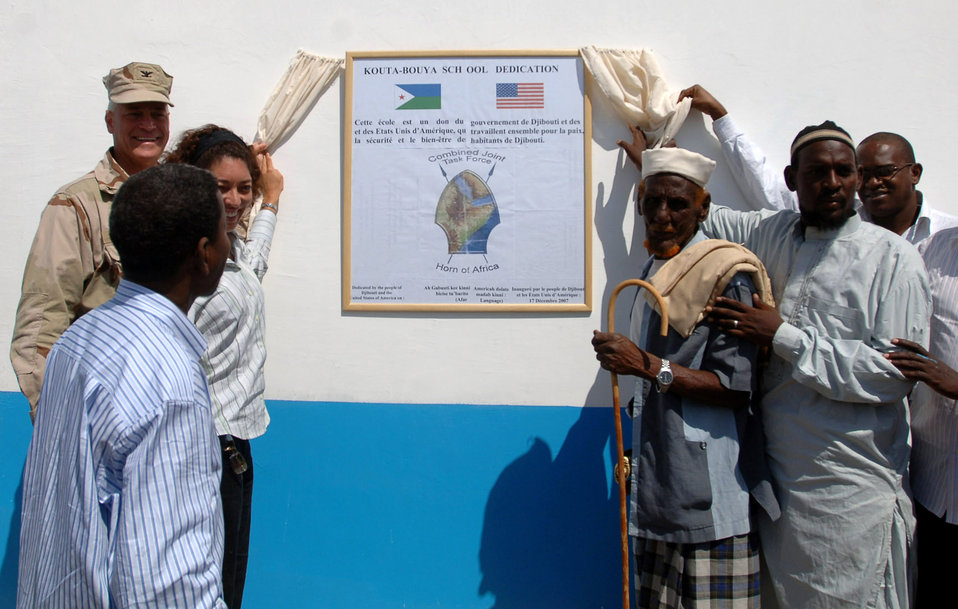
Servicemembers celebrate school dedication in Djibouti

Navy Capt. Bob Wright, (back left to front) and Christy Stoner unveils the Kouta Bouya Primary School dedication plaque with the help of the school director, the village elder, the contractor and other community members before the dedication ceremony Dec. 17 in Djibouti. Captain Wright is the Combined Joint Task Force-Horn of Africa J-9 Strategic Communications director, and Ms. Stoner is the U.S. Embassy to Djibouti representative.